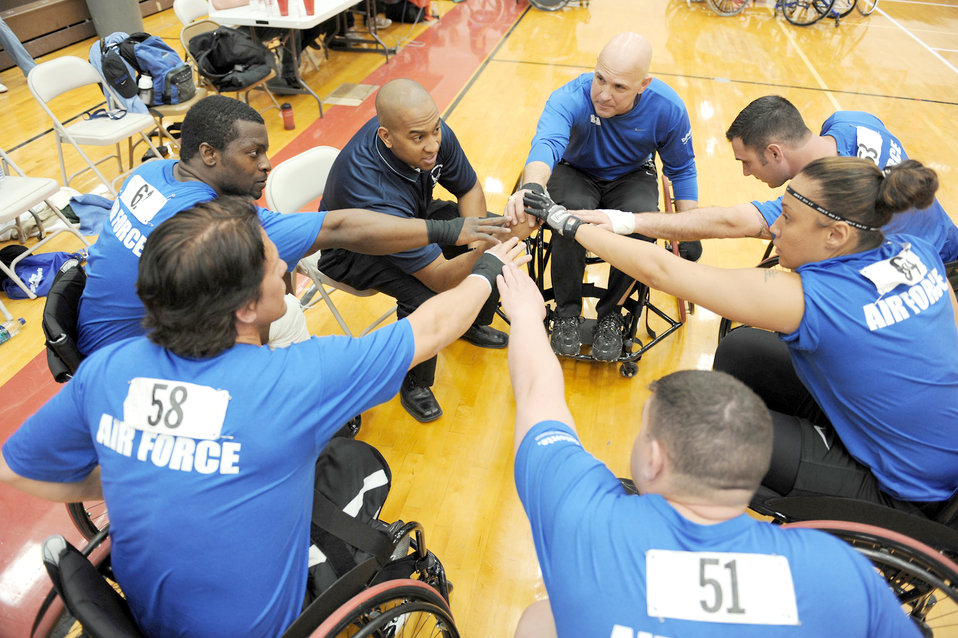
Go Team Air Force!

Members of Team Air Force get motivated before playing the bronze medal match against the Navy in wheelchair basketball during the Warrior Games May 12, 2010, at the Olympic Training Center in Colorado Springs, Colo. The Air Force went on to win the game 13-10.